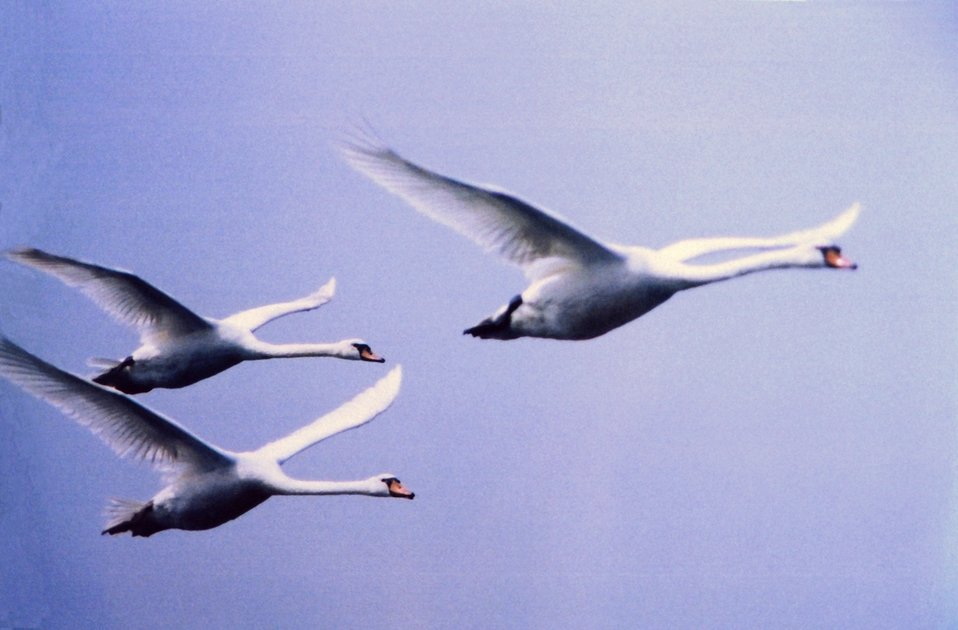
Mute swans in flight. Mute swans are an agressive invasive species. There are now over 3,000 mute swans in the Maryland portion of the Chesapeake Bay. They are easily distinguished from the tundra swan by their orange beaks.